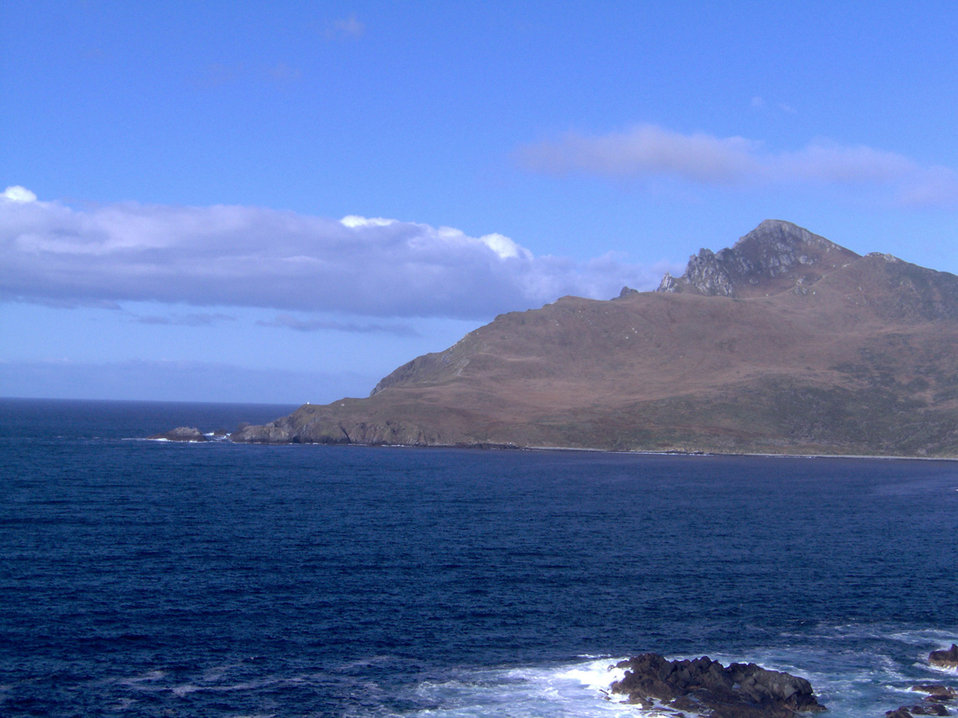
Cape Horn seen from the Chilean Station and Memorial location on 05/12/2006 at 08:00 AM. The small lighthouse can be seen as a white spot close to the seaside